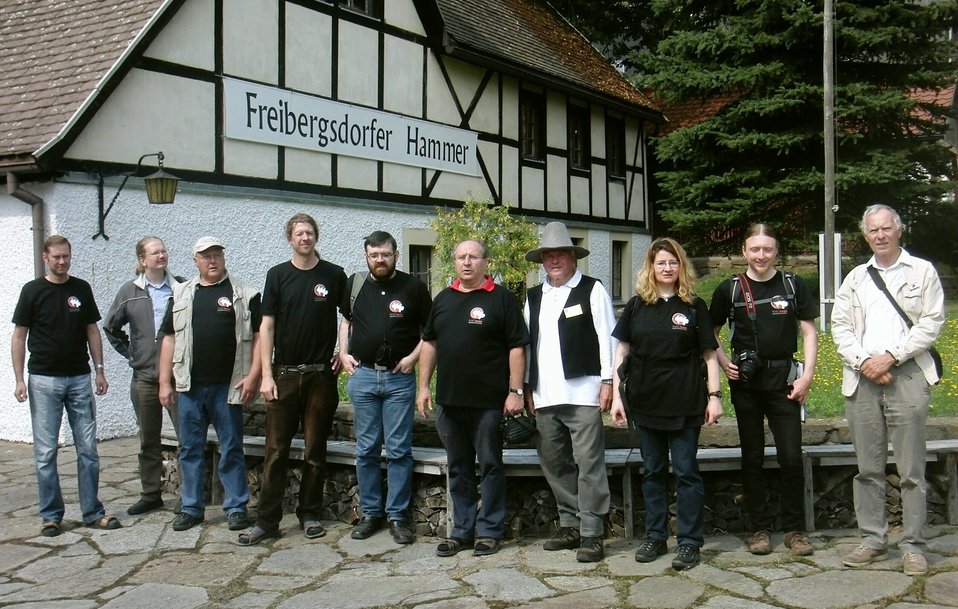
Deutsch: Gruppenfoto-Freibergsdorfer Hammer 13.08.31..